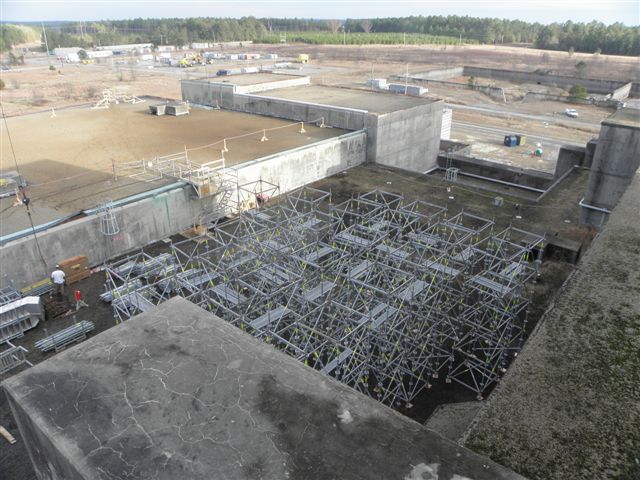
P Reactor decommissioning